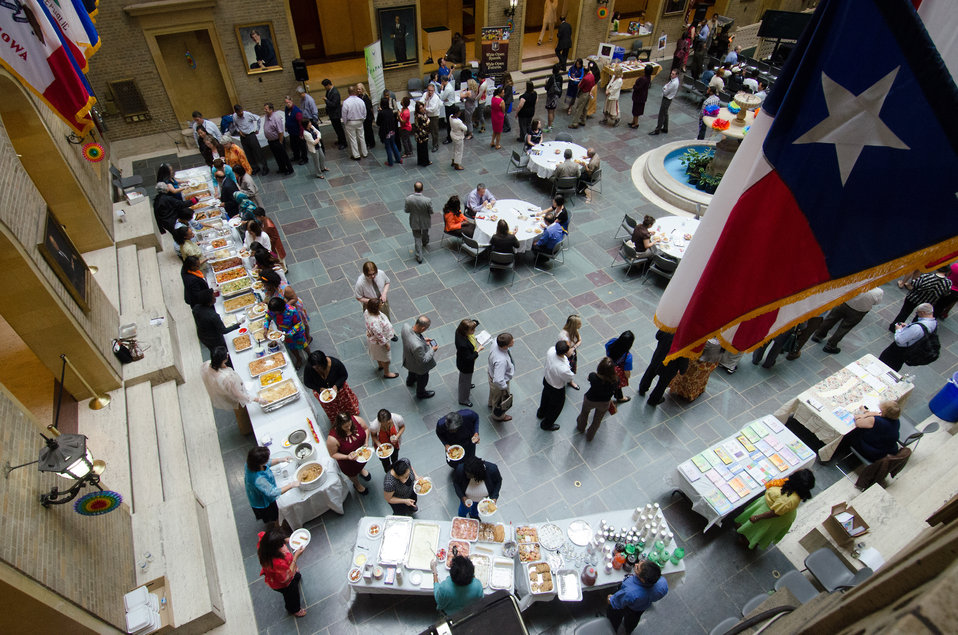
A long line forms for a taste of a dozen different Asian and Pacific Islander foods during the U.S. Department of Agriculture’s (USDA) Asian Pacific American Heritage Month Observance, at the USDA headquarters in Washington, D.C., on Thursday, May 23, 2013. This year’s theme is “Building leadership; Embracing the Cultural Values and Inclusions.”